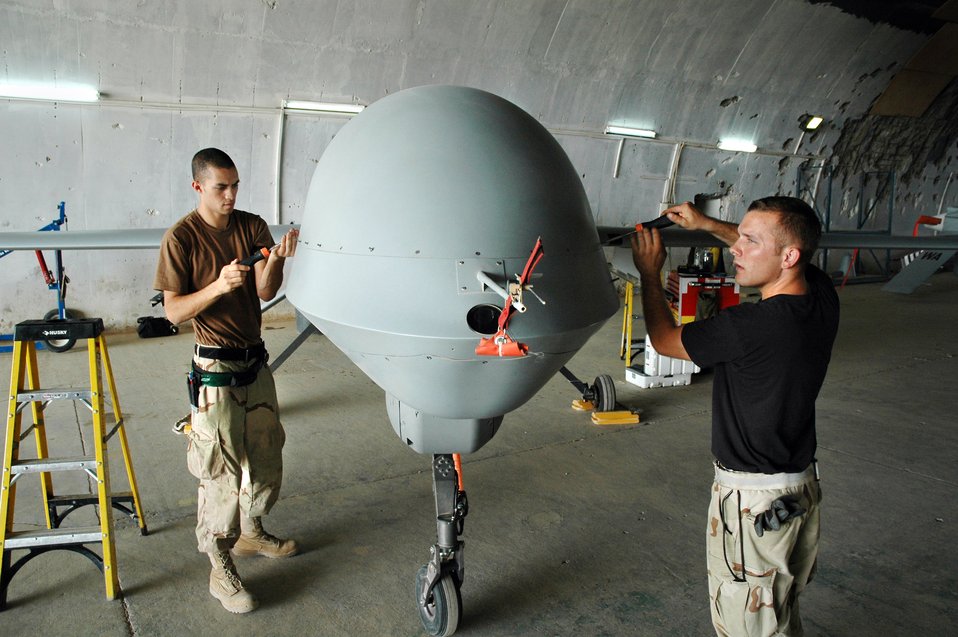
Keeping Predator primed and ready

BALAD AIR BASE, Iraq -- Senior Airmen Jason Henry (left) and Paul Rudolph attach the radome to an MQ-1 Predator unmanned aerial vehicle. Predators operating from here provide armed reconnaissance for battlefield commanders throughout Iraq. Airman Henry is an avionics technician, and Airman Rudolph is a crew chief with the 46th Aircraft Maintenance Unit here and is deployed from Creech Air Force Base, Nev.